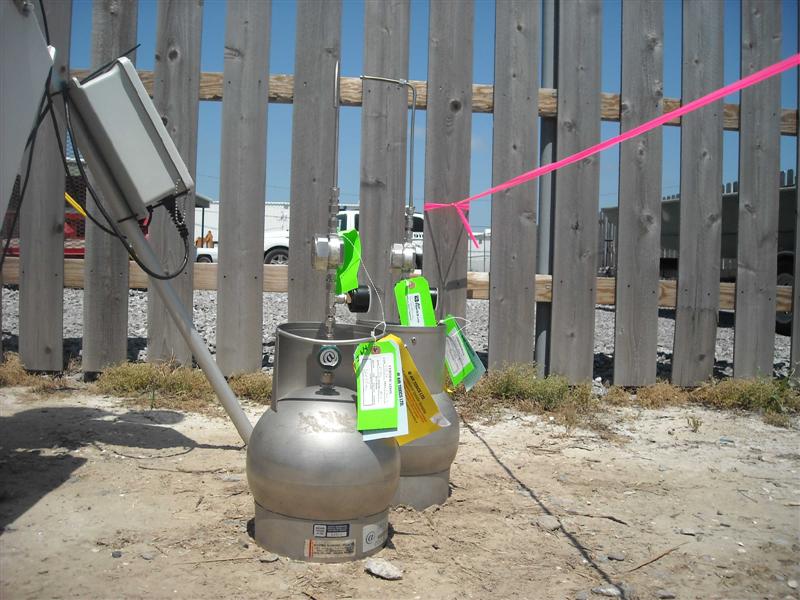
EPA Summa Canisters

Air sampling summa canister with field duplicate in Louisiana